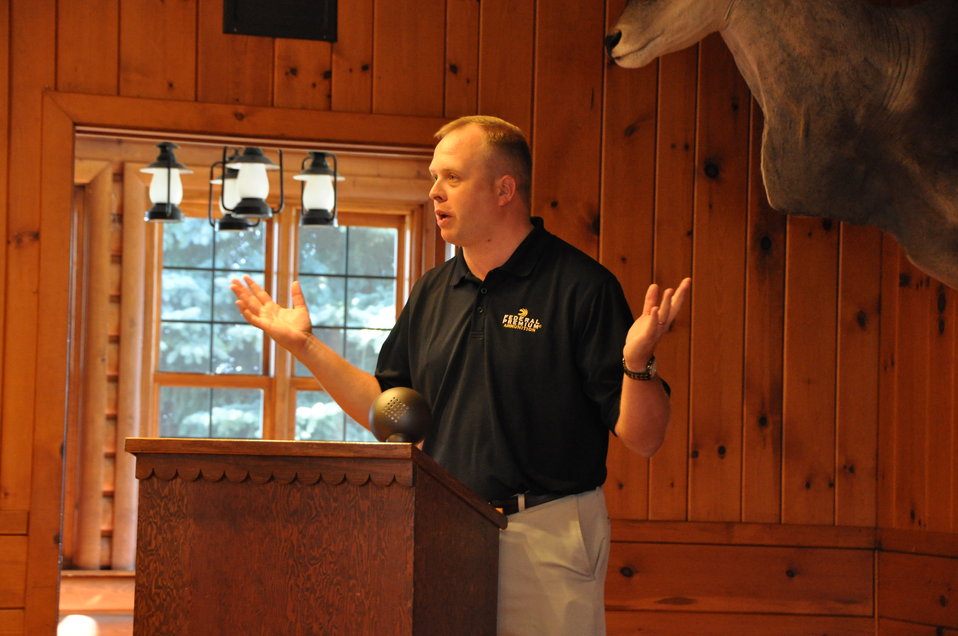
Ryan Bronson Speaks.

Federal Premium Ammunition's Ryan Bronson (Director of Conservation Programs).